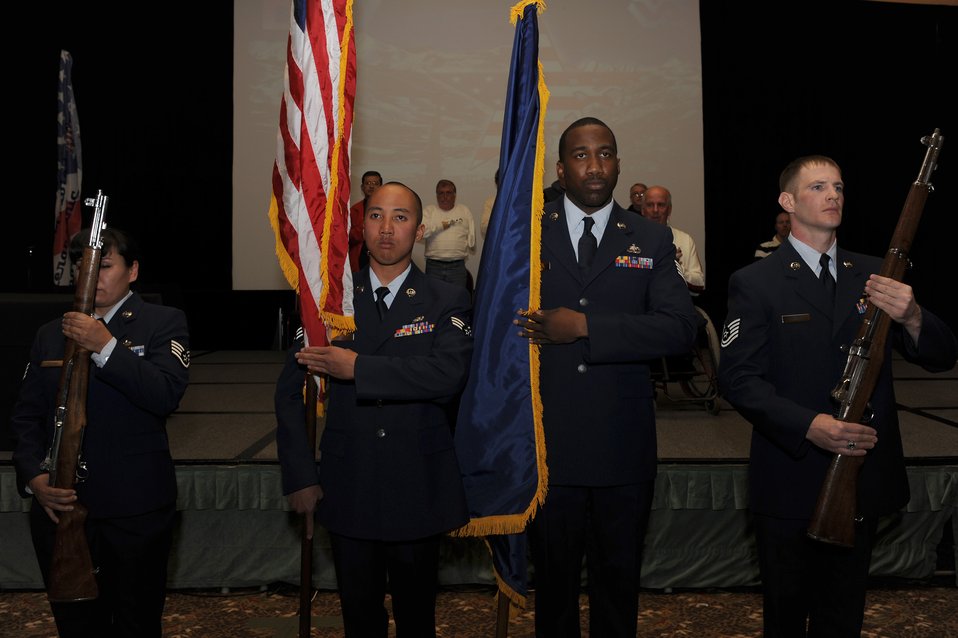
Winter Sports Clinic Opening Ceremony

Airmen from Luke Air Force Base, Ariz. post the colors during the opening ceremony inside The Silver Tree Hotel March 28 for the 24th National Disabled American Veterans Winter Sports Clinic in Snowmass Village, Colo. The event is sponsored by the Department of Veterans Affairs and Disabled American Veterans.